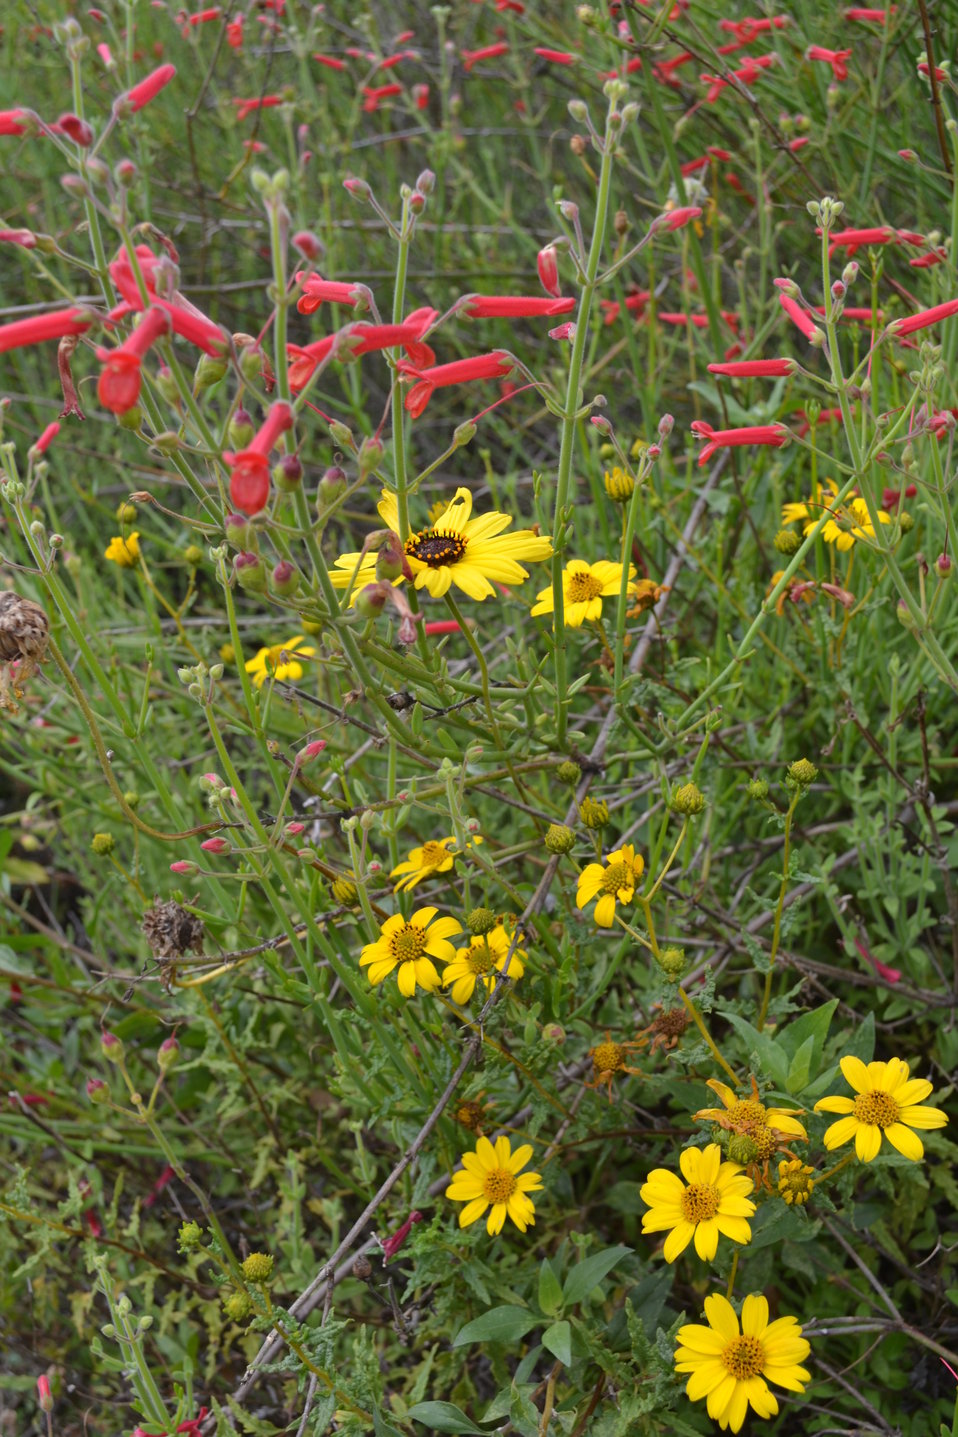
Mixed wildflowers

Scarlet bugler (Penstemon centranthifolius), Bush sunflower (Encelia californica) - has black center, and San Diego Sunflower (Bahiopsis laciniata) - has yellow center.